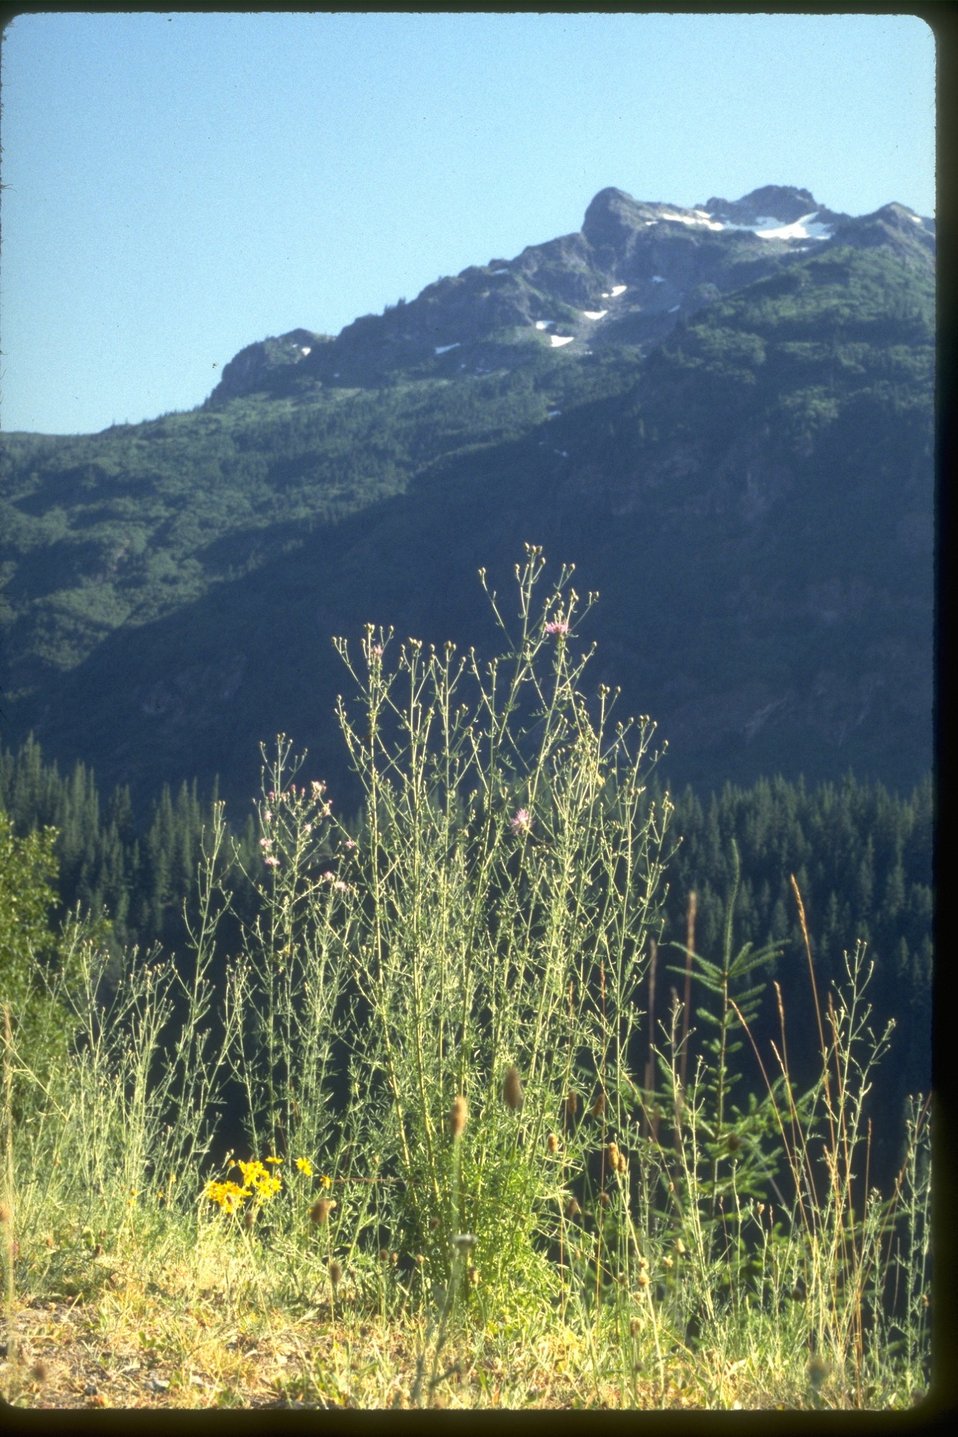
Spotted Knapweed in Rainier National Park.